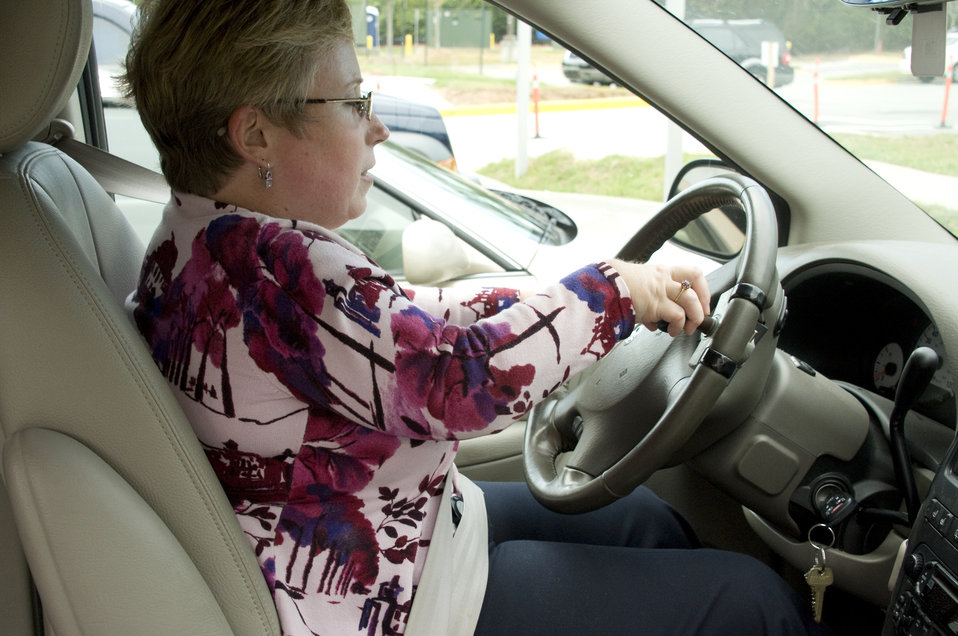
The woman pictured here, had just boarded her vehicle by way of an access ramp, while seated in her wheelchair, and had maneuvered herself into the driver's-side swivel seat. Due to her disability, the steering wheel was equipped with a hand control, which she held in her right hand, enabling her to operate the accelerator and braking system using her hand rather than her feet.